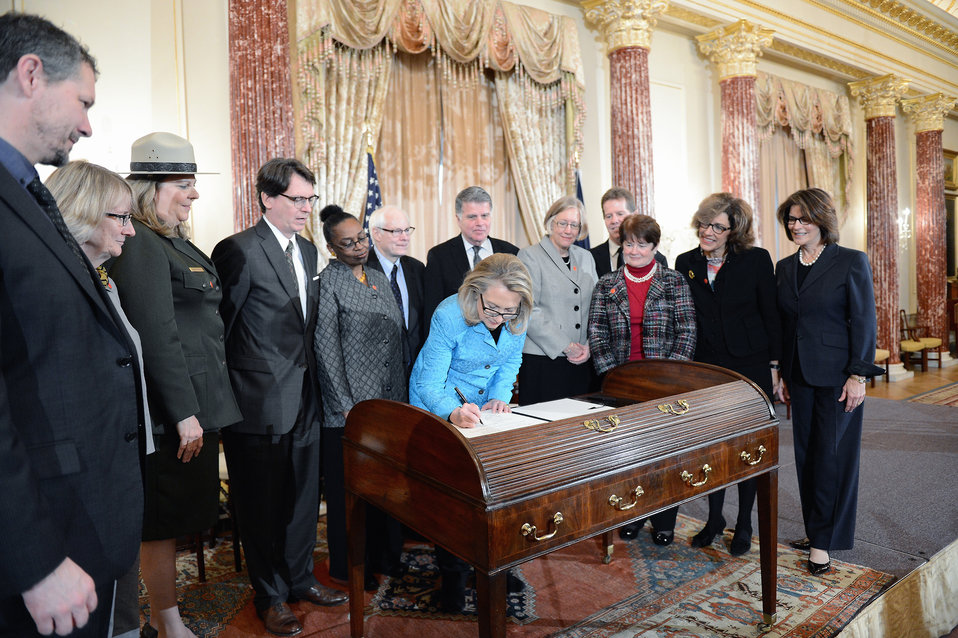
Secretary Clinton Signs the Declaration of Learning

U.S. Secretary of State Hillary Rodham Clinton signs the Declaration of Learning at the U.S. Department of State in Washington, D.C., January 30, 2013.